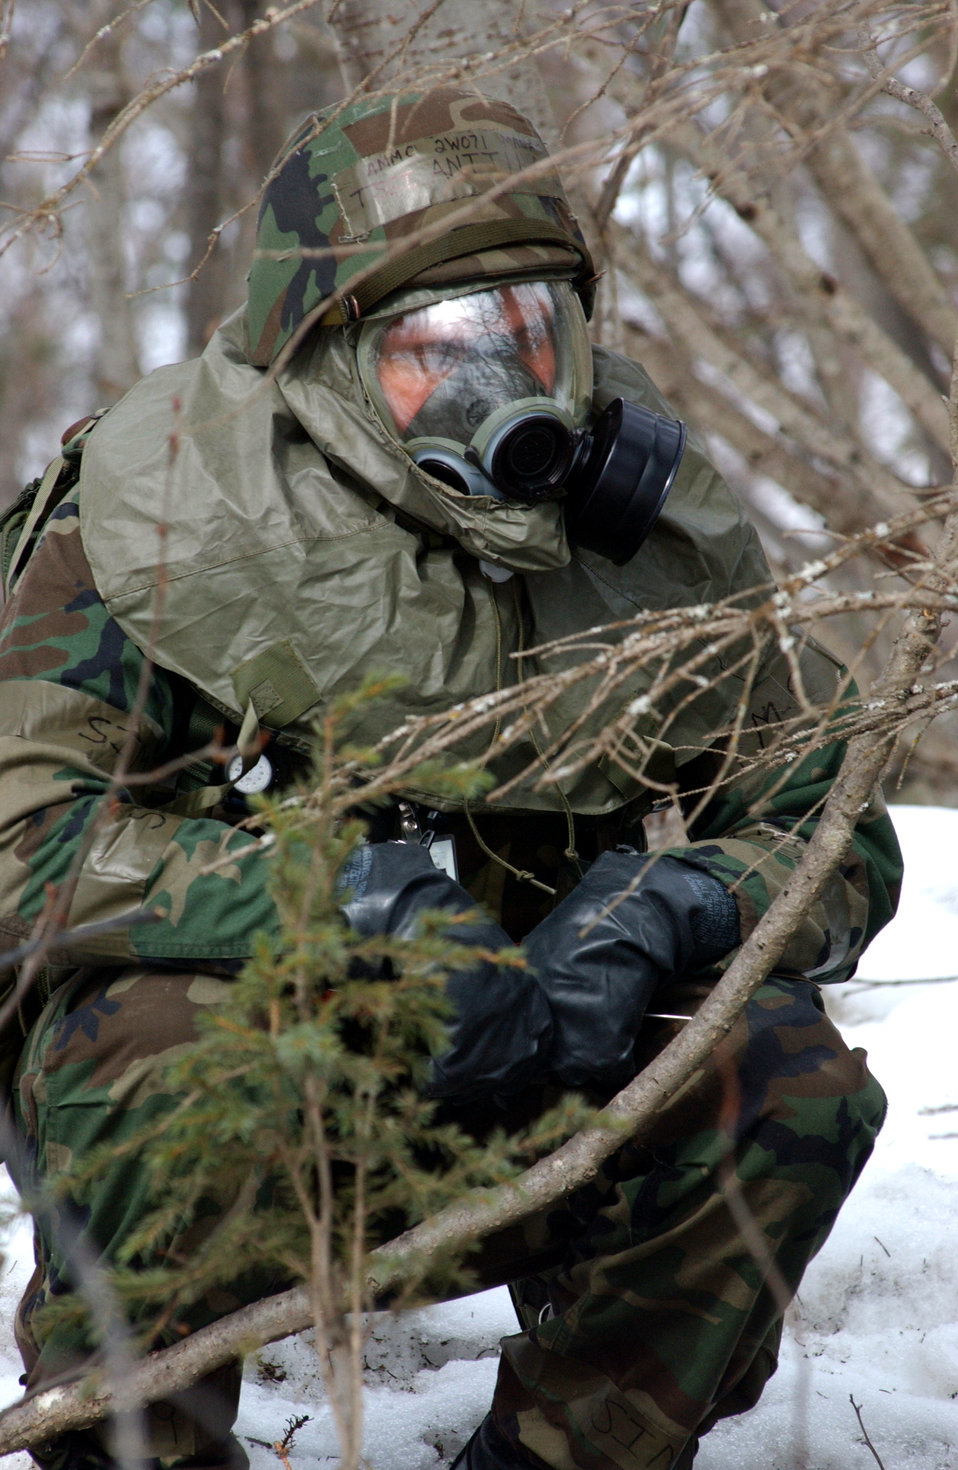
Take cover

ELMENDORF AIR FORCE BASE, Alaska -- Tech. Sgt. Keith Antilla takes cover during an attack on